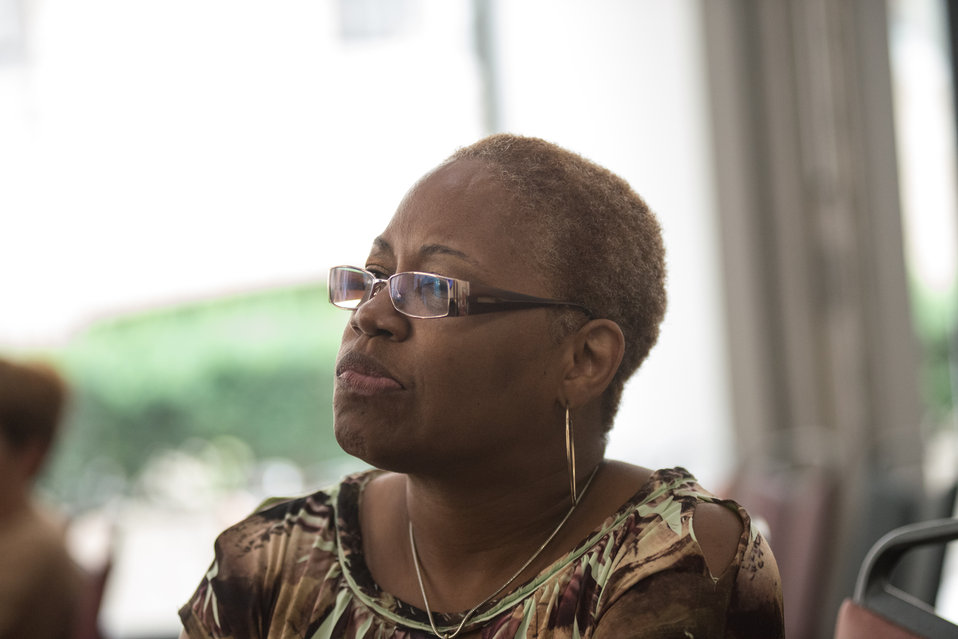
A U.S. Department of Agriculture employees listens to Sage Horizons Consulting Owner Cynthia Gibbs at USDA’s Rural Development (RD) 2nd Annual Cultural Transformation kickoff opening ceremony and forums, themed “Employees Influencing Change,” on Tuesday, Aug. 13, 2013 at USDA Washington, D.C.